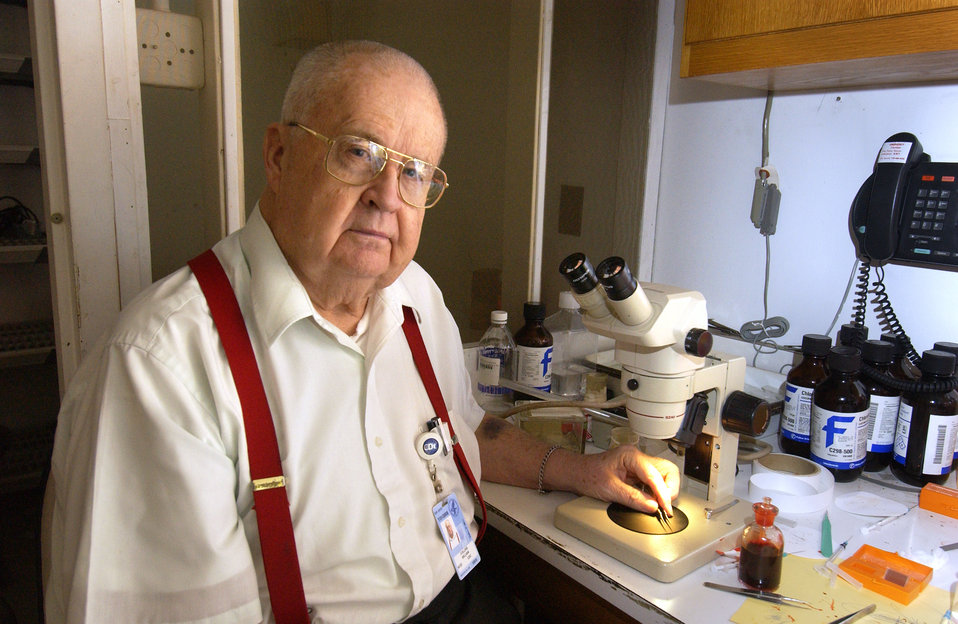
This 2004 photograph showed Dr. William 'Bill' Collins, a research biologist with the National Center for Infectious Diseases (NCID), Division of Parasitic Diseases (DPD).